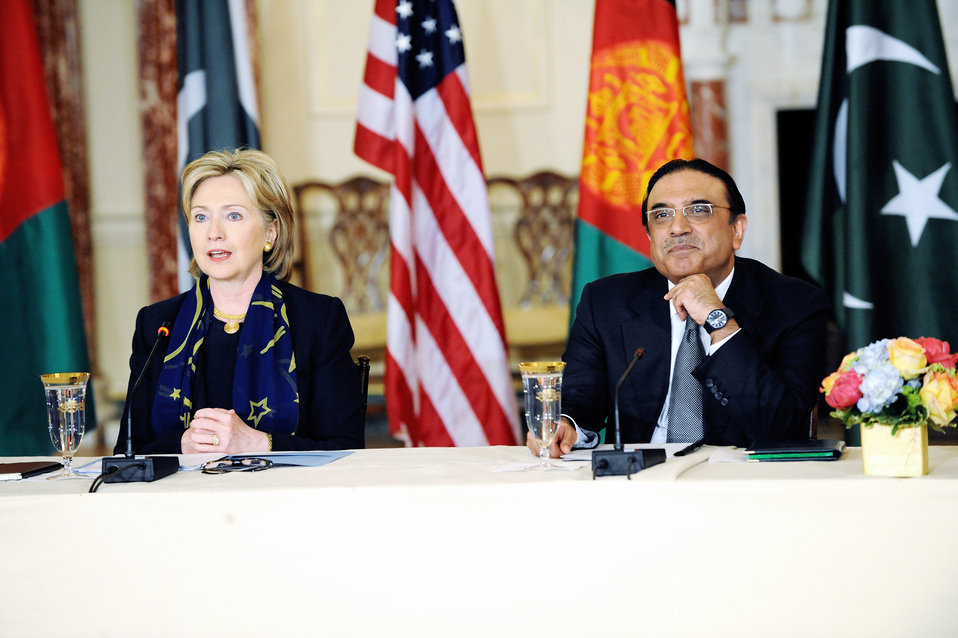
Trilateral Consultations With Afghanistan and Pakistan

U.S. Secretary of State Hillary Rodham Clinton provides remarks during talks with Pakistani President Asif Ali Zardari during trilateral consultations with Afghanistan and Pakistan at the U.S. Department of State in Washington, DC May 6, 2009.